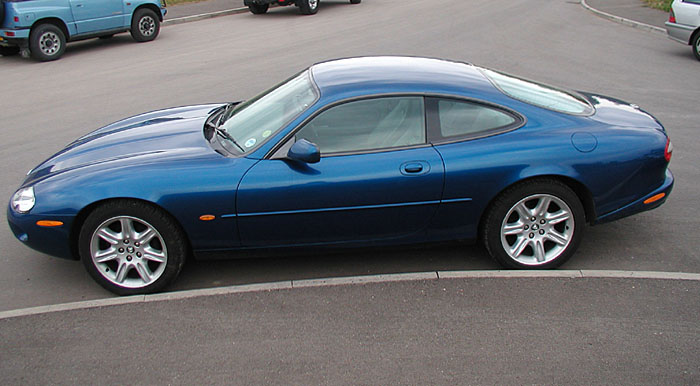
The Jaguar XK8 was launched in 1996. The 4.0 litre V8 engine produces 290 horsepower at 6100 rpm.
Taken at the Somerset Light Railway, near Taunton, England.